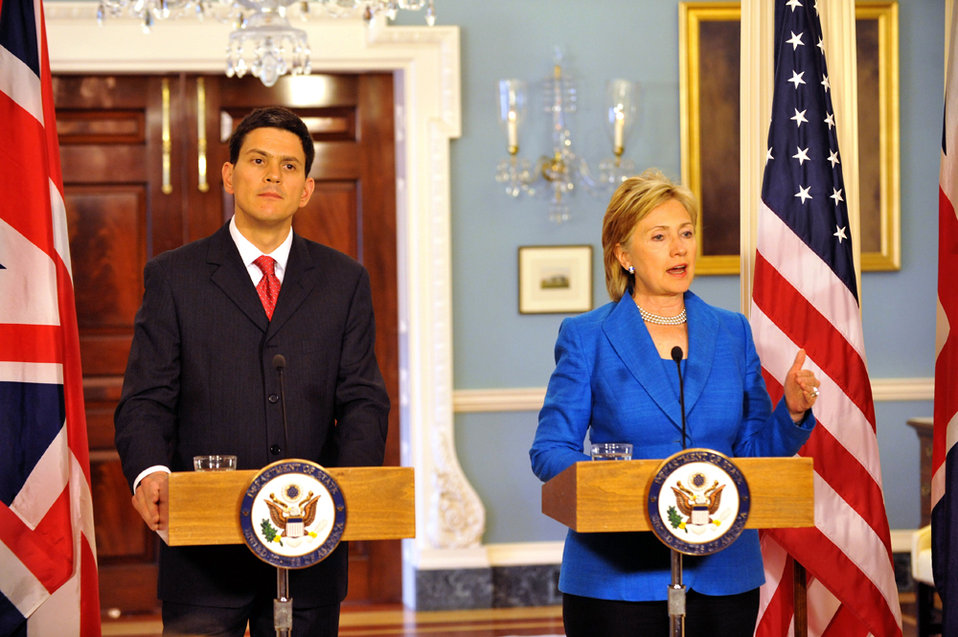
Secretary Clinton Meets With U.K. Foreign Minister

U.S. Secretary of State Hillary Rodham Clinton participates in joint press availability with The Right Honorable David Miliband, M.P., Secretary of State for Foreign and Commonwealth Affairs of the United Kingdom of Great Britain and Northern Ireland, in the Treaty Room of the U.S. Department of State in Washington, DC July 29, 2009.